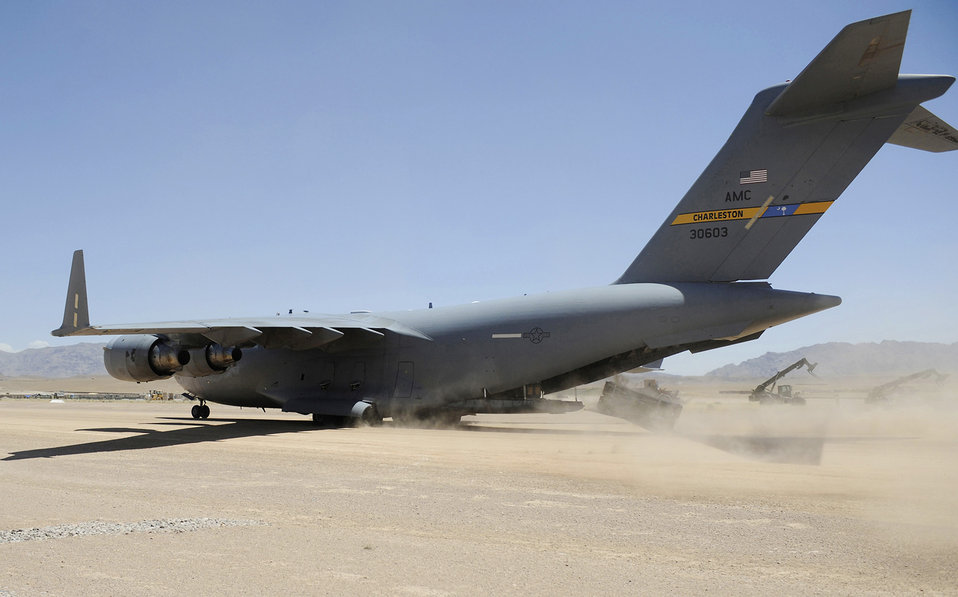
AMC testing for semi prepared runway ops increases C-17's deployed capabilities

A pallet is combat off-loaded from a C-17 Globemaster III June 20, 2009, at Tarin Kowt Airfield, Afghanistan. A recent test conducted by Air Mobility Command on semi prepared runway operations worldwide may help the C-17 be able to reach more forward operating locations such as Tarin Kowt.